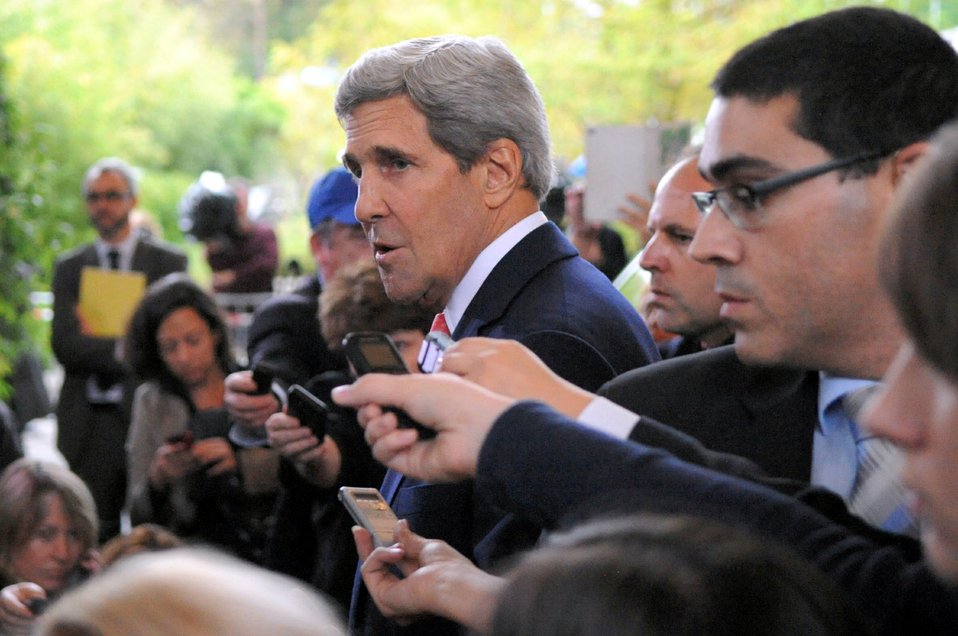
Secretary Kerry Addresses Reporters in Geneva

U.S. Secretary of State John Kerry addresses an international assembly of reporters upon arriving in Geneva, Switzerland, on November 8, 2013, for talks with P5 1 members and Iran about that country's nuclear capabilities.